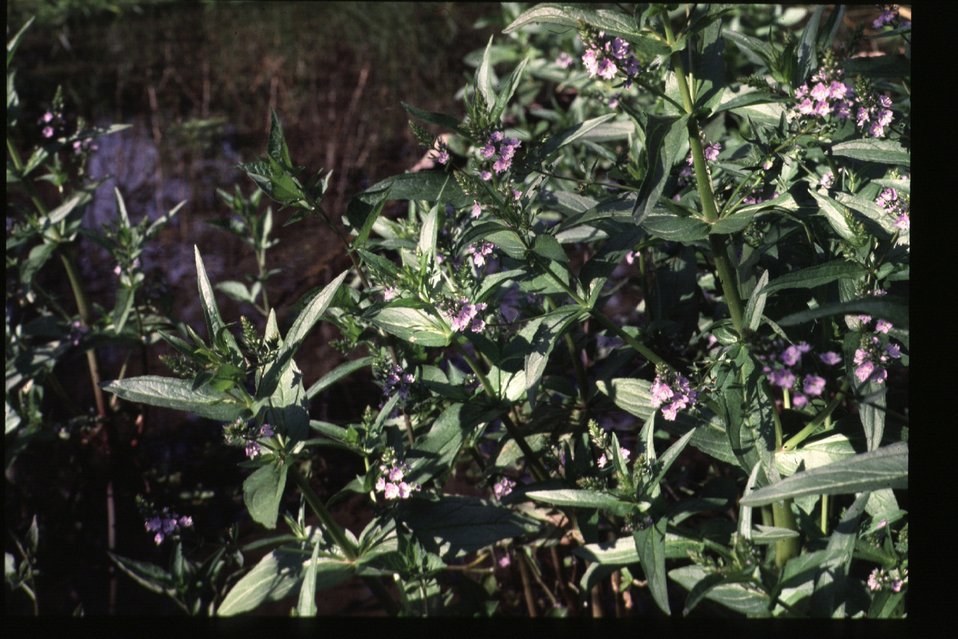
Veroncia Wildflower